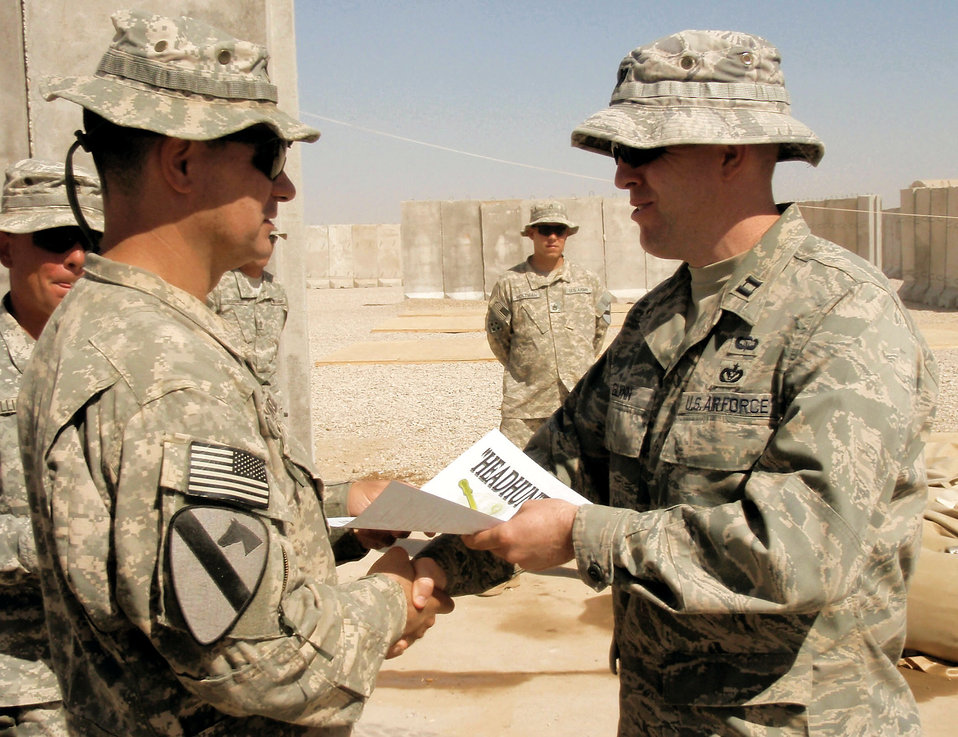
Airmen receive cavalry spurs for building new base

Army Lt. Col. Daryle Hernandez, left, accepts the symbolic key to the newly built Forward Operating Base Hunter, Iraq, from Air Force Capt. Jason Glynn at the base Oct. 20.